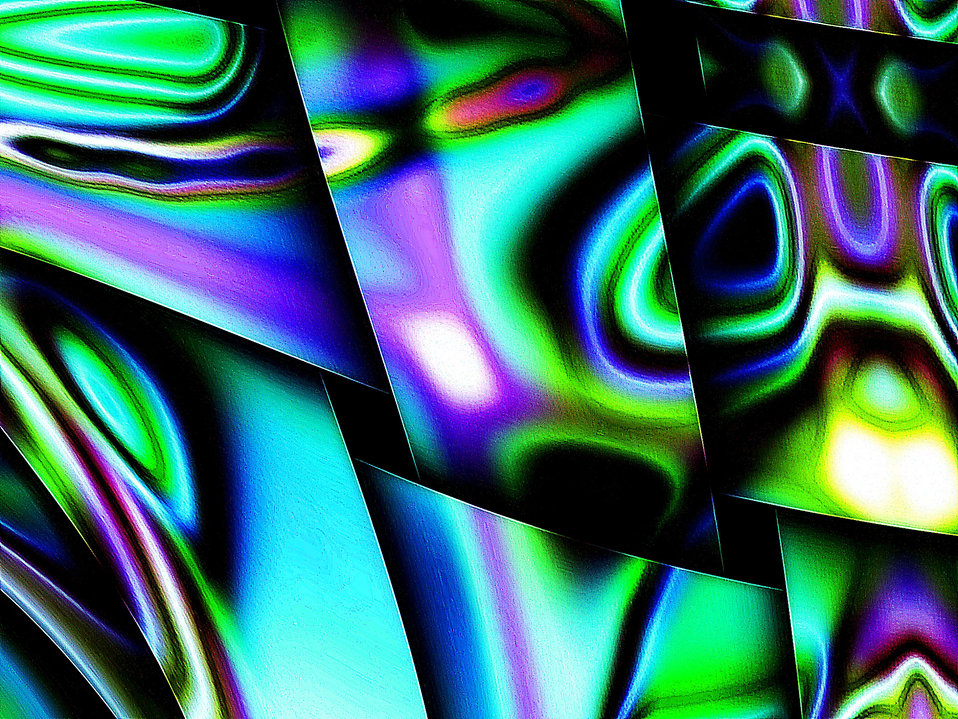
Background 241

Background.